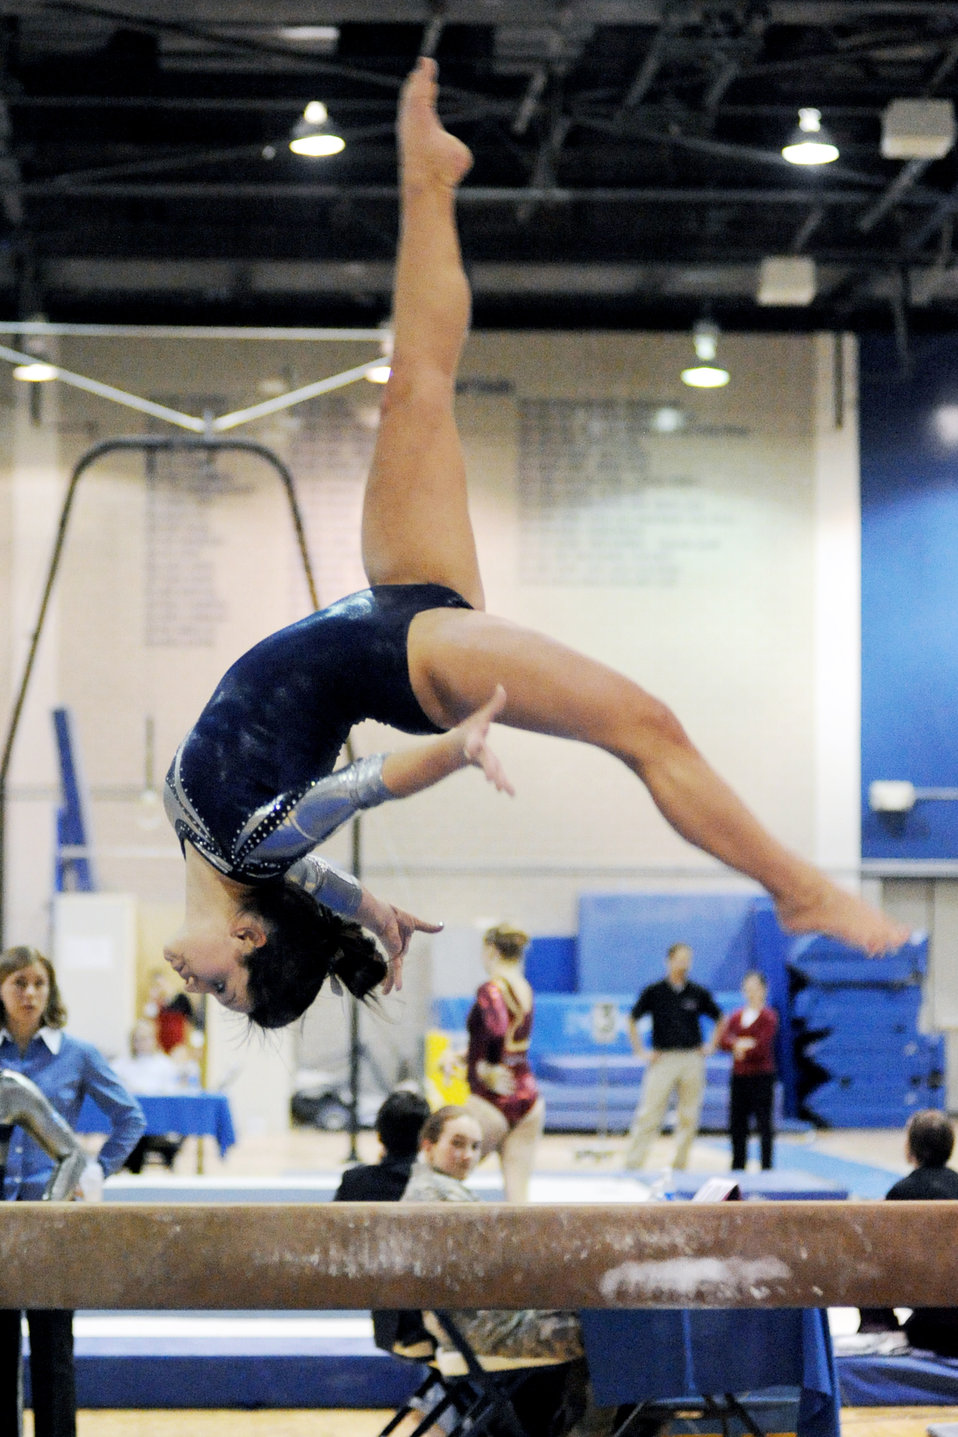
Women gymnasts compete in tri-meet

Freshman Britany Calley does a back flip on the balance beam while competing during the home tri-meet against Southeast Missouri State and Seattle-Pacific in the U.S. Air Force Academy's Cadet Gym Feb. 20, 2010. Air Force placed second in the team competition with a score of 188.00. Southeast Missouri came in first with 194.05 and Seattle Pacific finished with 187.075.